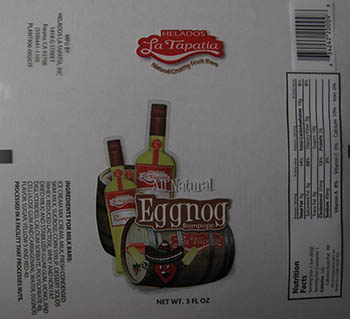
RECALLED – Ice cream products

March 19, 2014 – Product Recall – Helados La Tapatia, Inc. Recalls Products Because of Possible Health Risk.